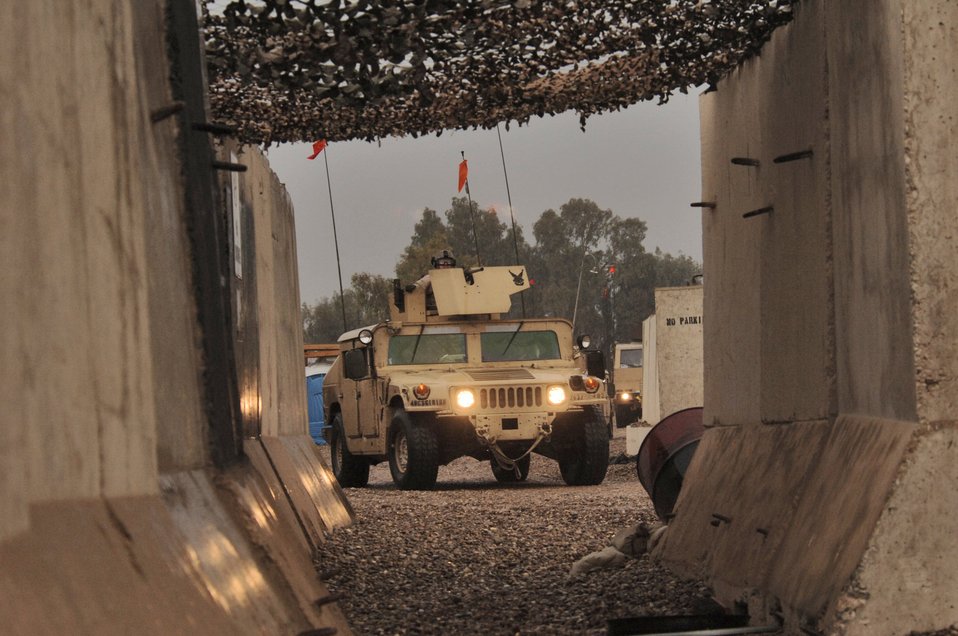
4 million miles

BALAD AIR BASE, Iraq -- M-1114 Humvee vehicles lead a convoy security team from the 732nd Expeditionary Logistics Readiness Squadron as they complete their 4-million mile mark Jan. 7. The team included some Soldiers for training purposes.